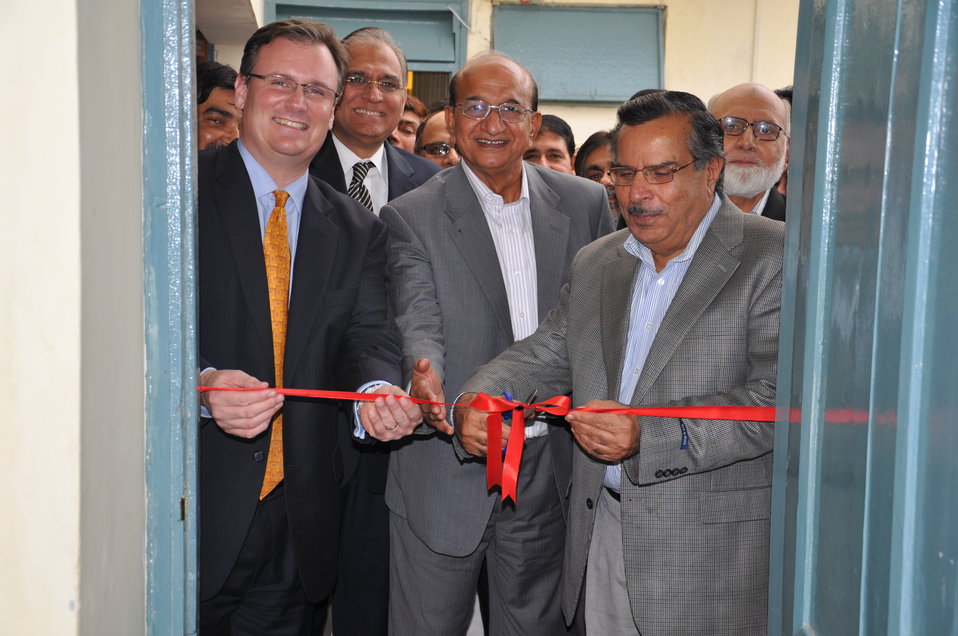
USAID provides State-of-the-Art Planning and Engineering Equipment to SEPCO

“It is a huge step towards helping Sukkur Electric Supply Company SEPCO grows as an independent Power Distribution Company in the region. I am confident that with this effort, SEPCO will now be able to better supply electricity to consumers in Sukkur.” Sukkur Electric Power Company, Chief Executive Officer

Sukkur is a newly created DISCO, and cateres to 150,000 customers. Unlike other DISCOs, SEPCO never had a Planning and Engineering (P&E) section in place, making it very unique. Consequently, for the first time, a P&E section has been established at SEPCO through USAID’s assistance.